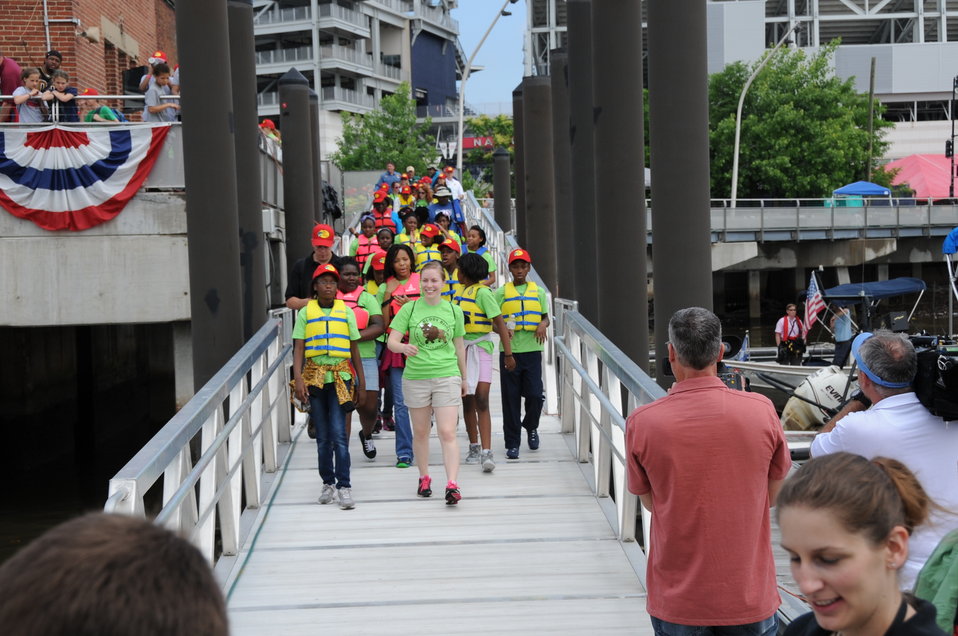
2013 National Fishing and Boating Week

Local students prepare to enjoy fishing at the annual kick-off of National Fishing and Boating Week on the Anacostia River in Washington D.C.